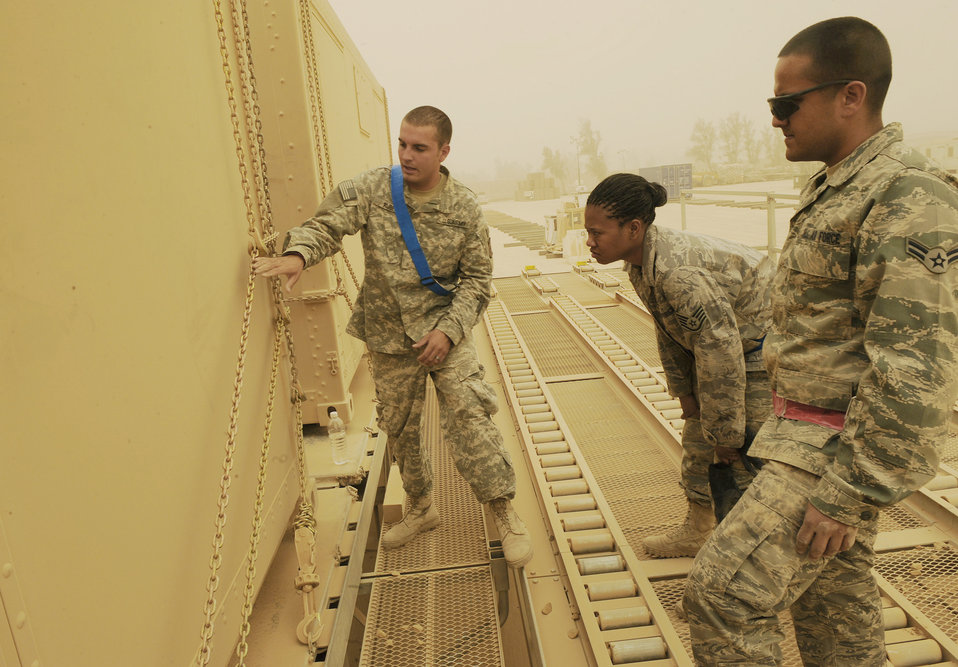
Airmen take reins on Army cargo movement mission

Army Sgt. Josiah Rubi shows Staff Sgt. Starlette McMillan and Airman 1st Class Manuel Babilonia how to put the chains over a metal container June 18 at Sather Air Base, Iraq. Sergeant McMillan and Airman Babilonia are part of a 16-person 22nd Movement Control Team taking over the mission from the Army?s 258th Movement Cargo Team. Sergeant Rubi is deployed from Hunter Army Airfield, Savannah, Ga. and a native of Winslow, Ariz. Sergeant McMillan is deployed from Fairchild Air Force Base, Wash., and a native of Silverdale, Wash. Airman Babilonia is deployed from Aviano Air Base, Italy, and a native of Puerto Rico.